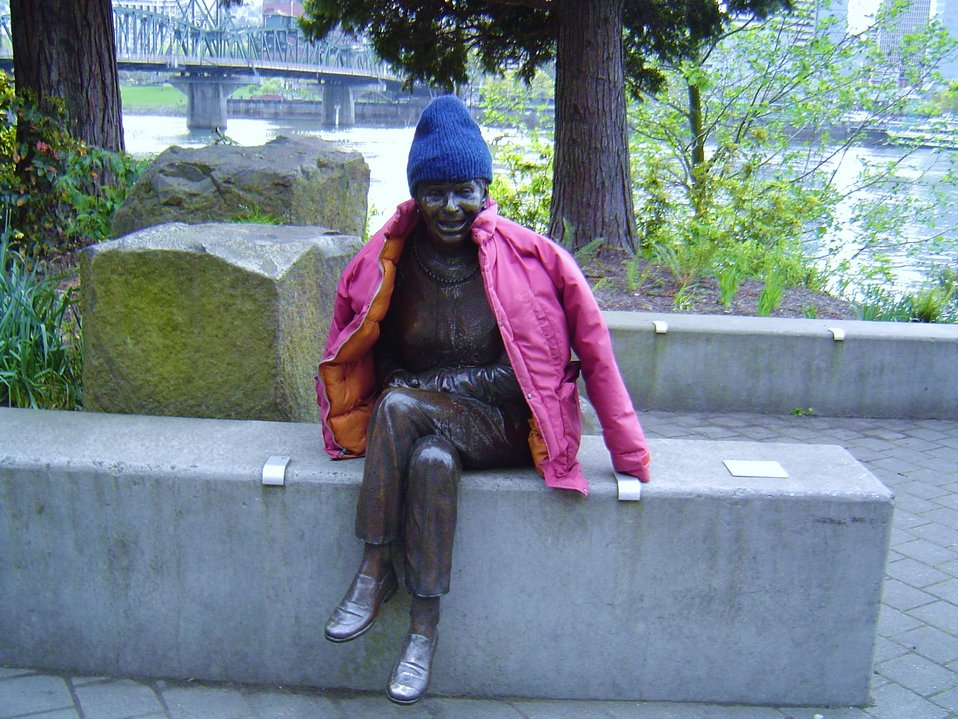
Even statues get cold. Friendly statue relaxing along the Willamette River.